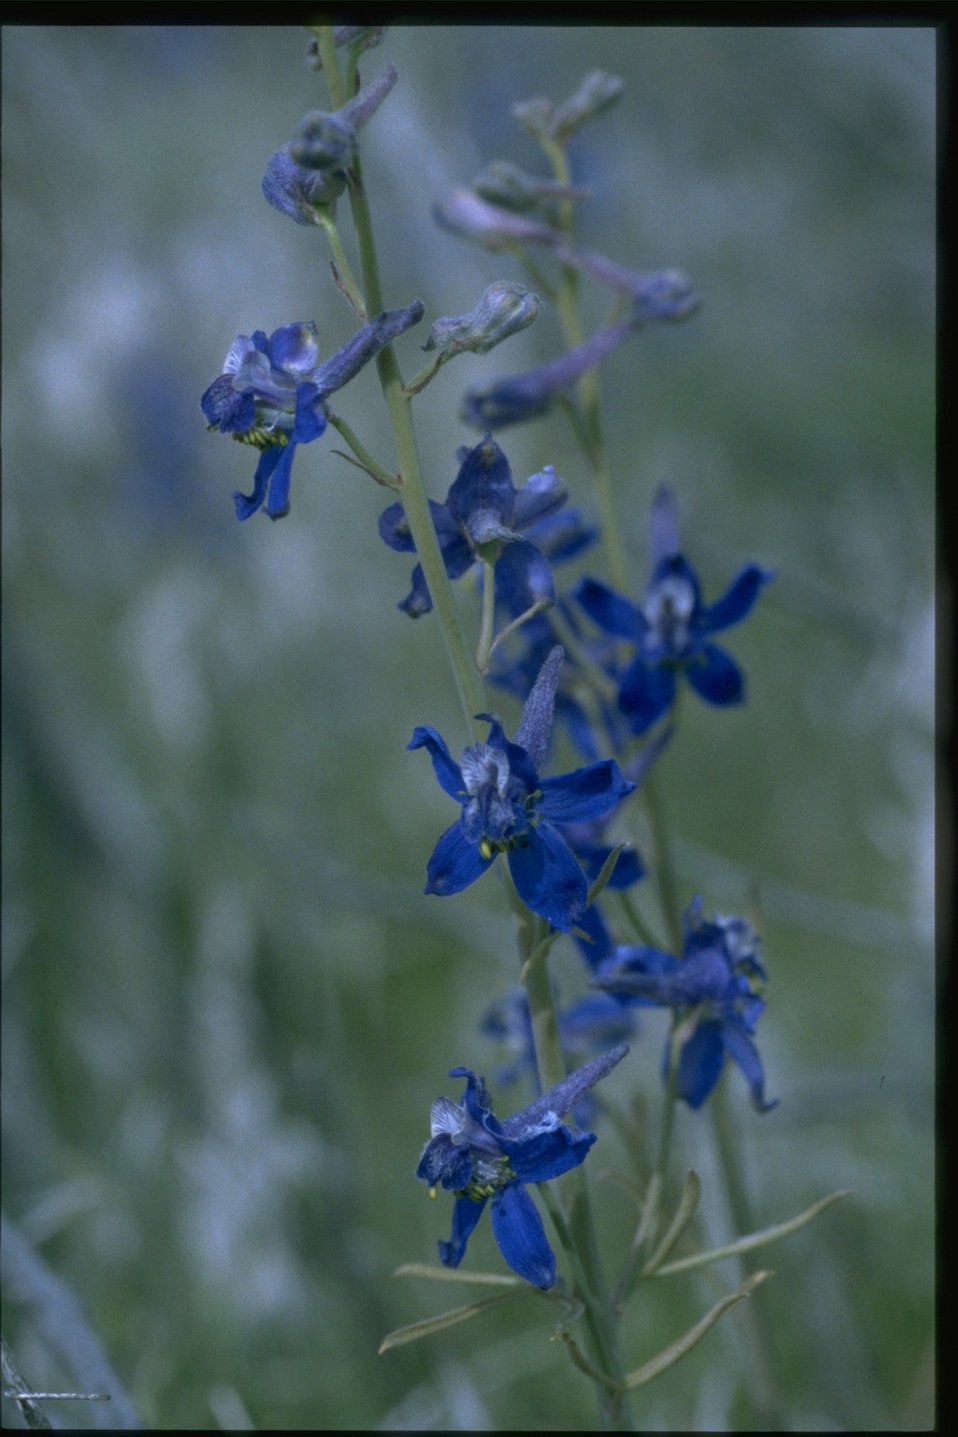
Closeup shot of Larkspur wildflowers.